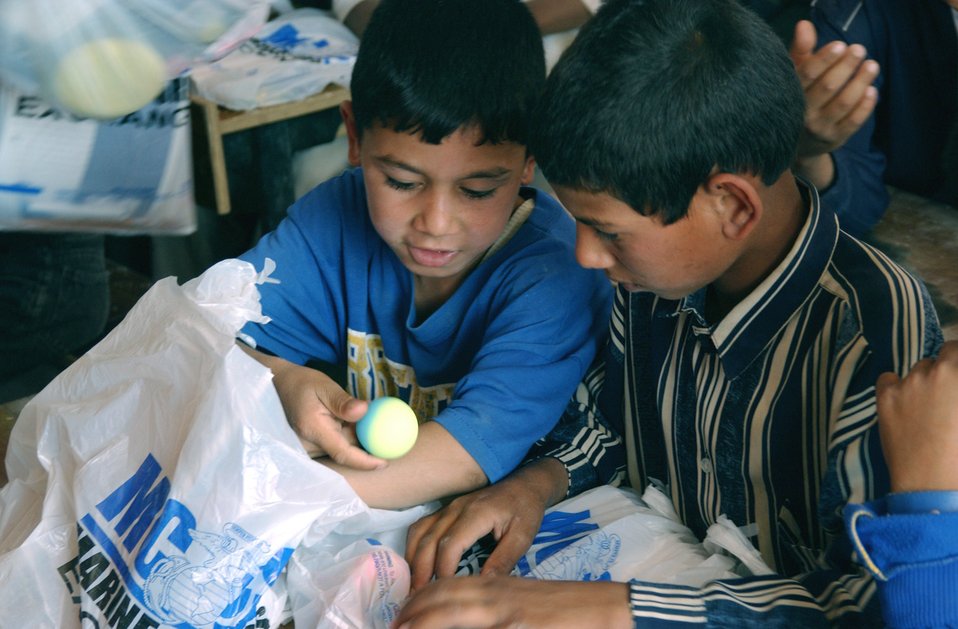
Gifts from America

BALAD AIR BASE, Iraq -- Two young Iraqi children look at a ball they just received from Airmen and Soldiers at a village near here as part of a humanitarian mission. The servicemembers handed out school supplies and toys that had been collected by children from several schools in Florida.